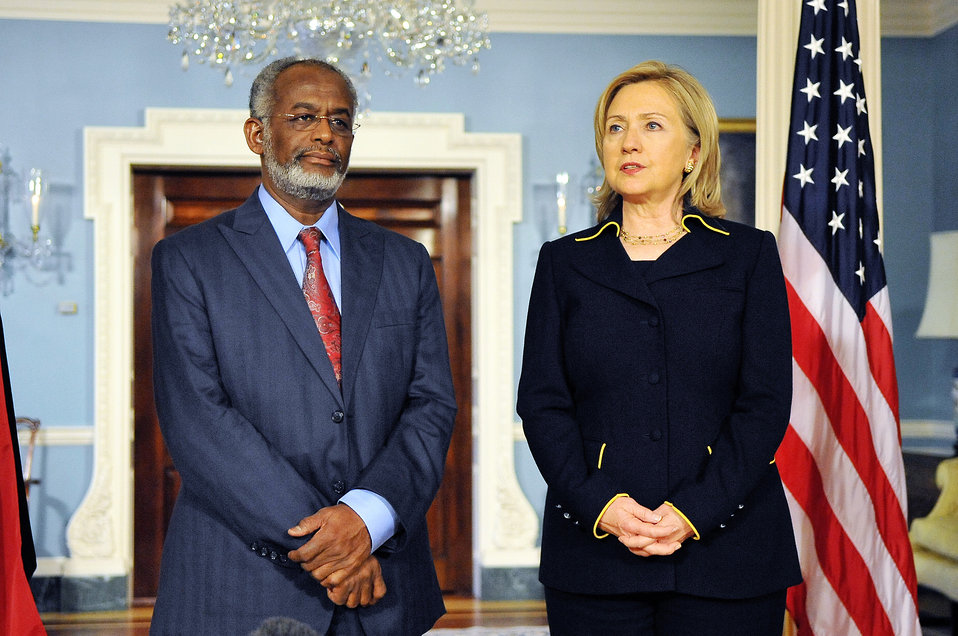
Secretary Clinton Holds a Bilateral Meeting With Sudanese Foreign Minister Karti

U.S. Secretary of State Hillary Rodham Clinton holds a bilateral meeting with Sudanese Foreign Minister Ahmen Ali Karti at the U.S. Department of State in Washington, D.C., on January 26, 2011.